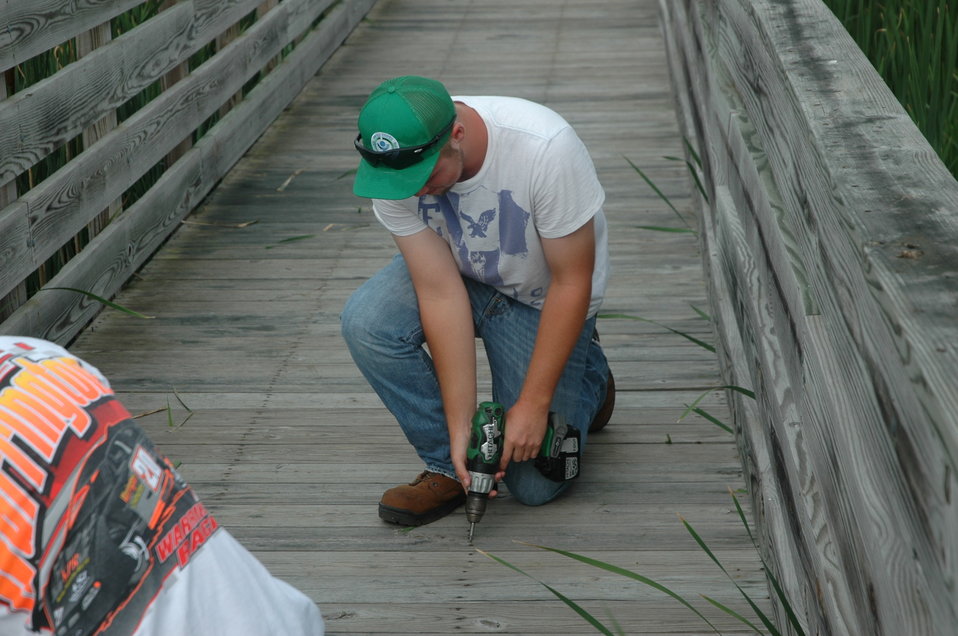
YCC Boardwalk Trail Repair

A YCC crew member repairs a boardwalk trail at Prime Hook National Wildlife Refuge.